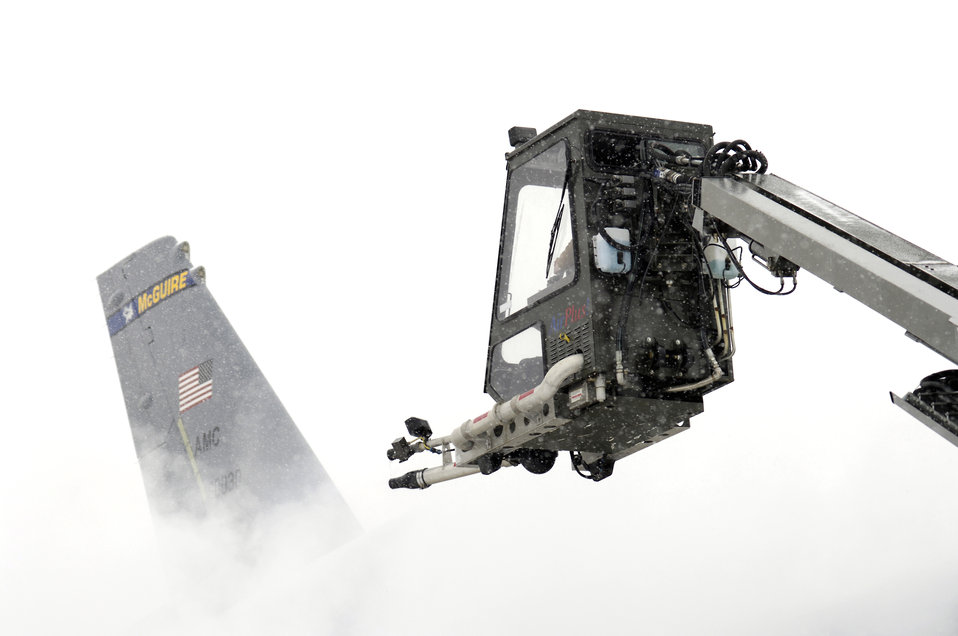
De-ice is nice

A KC-10A Extender is deiced March 7 by a member of the 605th Aircraft Maintenance Squadron at McGuire Air Force Base, N.J. during a snow storm that hit the base.